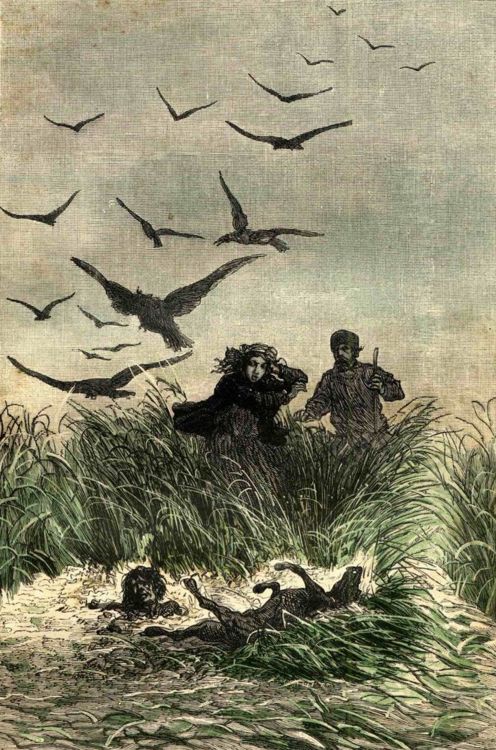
An illustration from the novel 'Michael Strogoff: The Courier of the Czar' by Jules Verne drawn by Jules Férat. Polski: Ilustracja powieści Juliusza Verne'a 'Michał Strogow, kurier carski' autorstwa Julesa Férata. Français : 'Michel Strogoff. Le courier du tzar', Jules Férat. Français : Une tête sortait du sol.